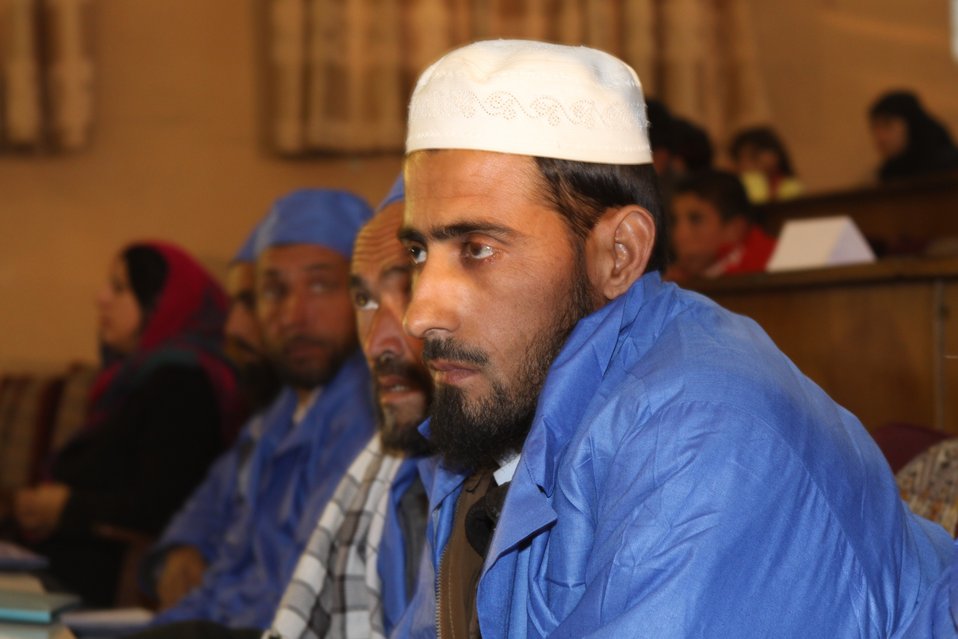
Community Health Workers Celebrated

Kabul, Afghanistan | December 5, 2010 — In support of the United Nations designated International Volunteer Day for Economic and Social Development, Afghanistan’s Ministry of Public Health celebrated its annual Community Health Worker Day today. Acting Minister of Public Health Dr. Suraya Dalil, USAID Senior Deputy Mission Director Robert Hellyer, other government officials, and international donors joined in recognizing the critical contribution of community health workers in Afghanistan and encouraging them to continue their voluntary support to their communities.
The event praised the contributions of the more than 22,000 volunteers throughout the country who deliver community level health-education, counseling, and services out of village health posts located in private homes. The Ministry of Public Health envisioned that community-based healthcare programs will actively encourage communities and families to adopt healthy lifestyles and behaviors, and provide families access to high quality and socially acceptable preventative medicine and life-saving services.
“We have 22,000 community health workers in Afghanistan that are able to implement the basic and standard medicines. They all have been trained through a job description,” said Minister Dalil. Addressing the health workers, she added, “I am proud and feel powerful that I have people like you.”
USAID-funded health projects collaborate closely with the Ministry of Public Health to improve the health and nutritional status of Afghans, provide quality primary healthcare, and promote healthy behaviors at the community and household-levels. USAID supported the training of more than 9,000 of the volunteer community health workers currently working in Afghanistan.
“On behalf of the American people, I congratulate the Community Health Workers for their diligence to gain the skills and knowledge necessary to serve their communities in this important role,” said USAID Senior Deputy Mission Director Hellyer. “USAID strongly supports community based health care and believes that quality community-based health services are essential to reaching Afghanistan’s Millennium Development Goals.”
To support the Basic Package of Health Services, USAID assisted in developing the community health worker training manual, helped train community health worker supervisors and master-trainers, facilitated in-service training, and produced and developed reporting tools, job aids, and education materials.